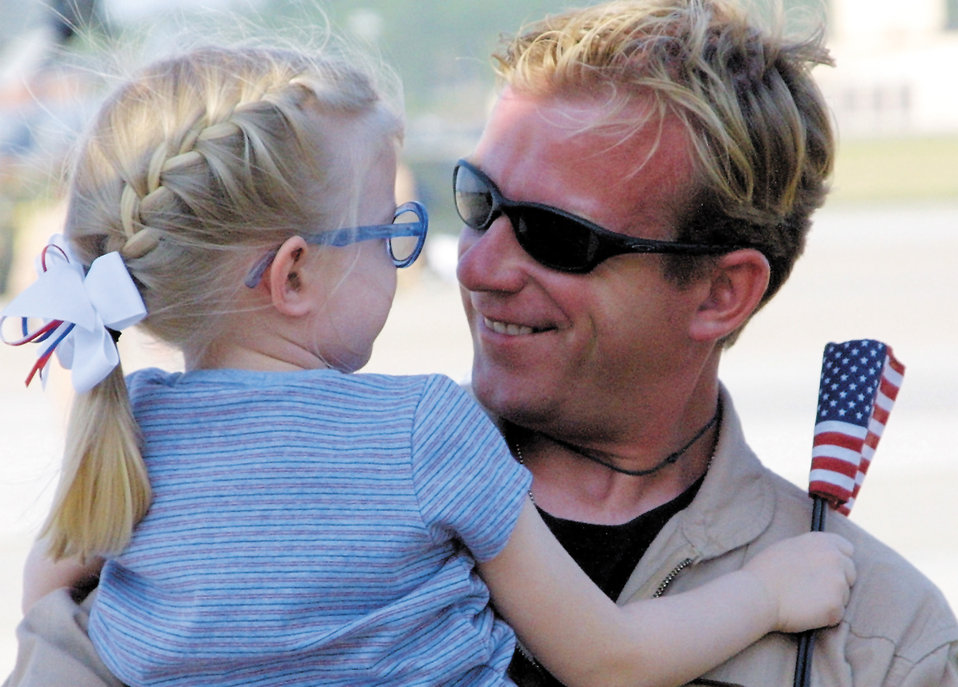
Happy homecoming

POPE AIR FORCE BASE, N.C. -- Colynn Reed welcomes her father home with a hug after he returned April 19 from a three-month deployment in Southwest Asia. Senior Airman Scott Reed is assigned to the 41st Airlift Squadron here.